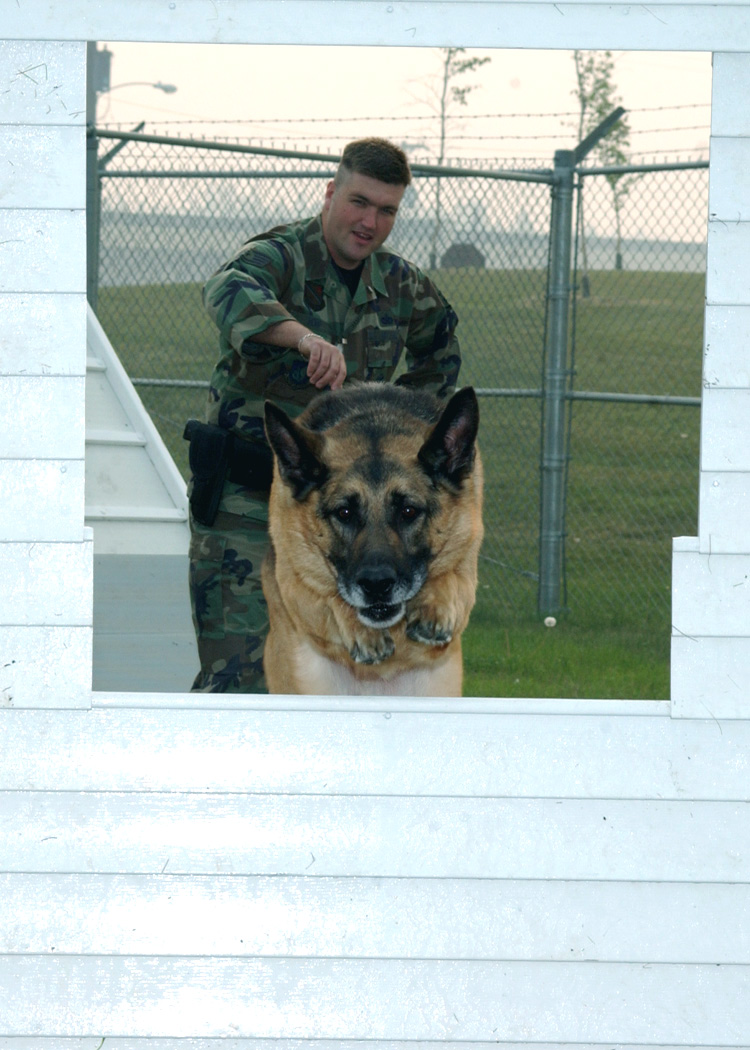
Dog patrol

EIELSON AIR FORCE BASE, Alaska -- Staff Sgt. Robert Houp instructs Rin Tin, a military working, to jump through an obstacle during training Aug. 18. Military working dogs here provide anti-terrorism and security to the base as well as to deployed locations worldwide. Rin Tin's day usually begins at 4 a.m. with feeding and a seven-point checkup by his handler. Then comes grooming, a rub down, obedience training and a run through the confidence course before beginning the day on patrol. Sergeant Houp and the 7-year-old 98-pound German shepherd are assigned to the 354th Security Forces Squadron.